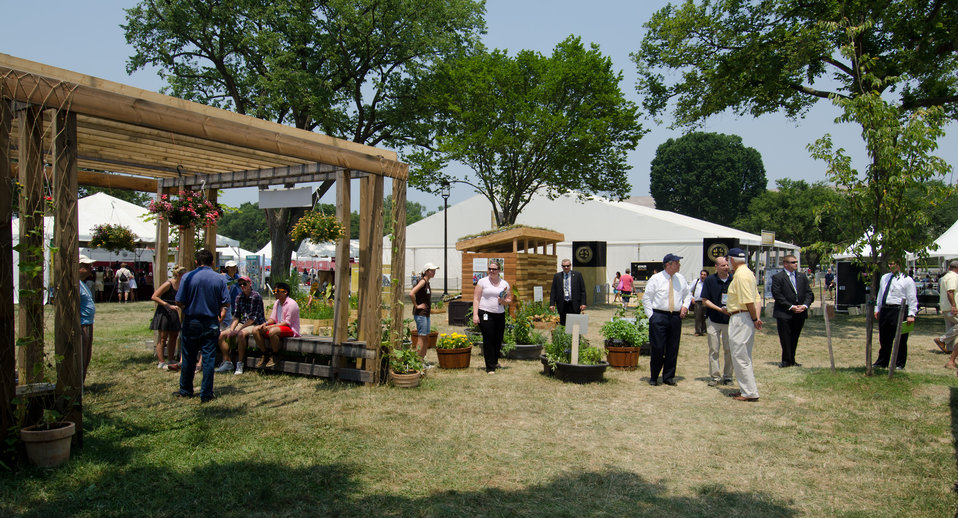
Smithsonian Institution’s Stephen Kidd guides Agriculture Secretary Tom Vilsack through the People’s Garden display and talks about the various aspects of Campus and Community themed section of the 2012 Smithsonian Folklife Festival, on the National Mall in Washington, D.C. on Friday, June 29, 2012 Near by is the Mississippi State University Mobile Veterinary Clinic that serves the Northern Mississippi area by providing Spay and neuter services to those in need, and provides medical experience for students. One of the three themes this year is “Campus and Community.” It celebrates the 150 years of the USDA and the Land-Grant University System. The U.S. Department of Agriculture (USDA) and the Land-Grant system extend education across the country, contributing to American agriculture success and rural prosperity. “Campus and Community” has demonstrations, discussions, hands-on activities, and entertainment to that showcase the many ways that this partnership works to improve American agriculture and rural life.